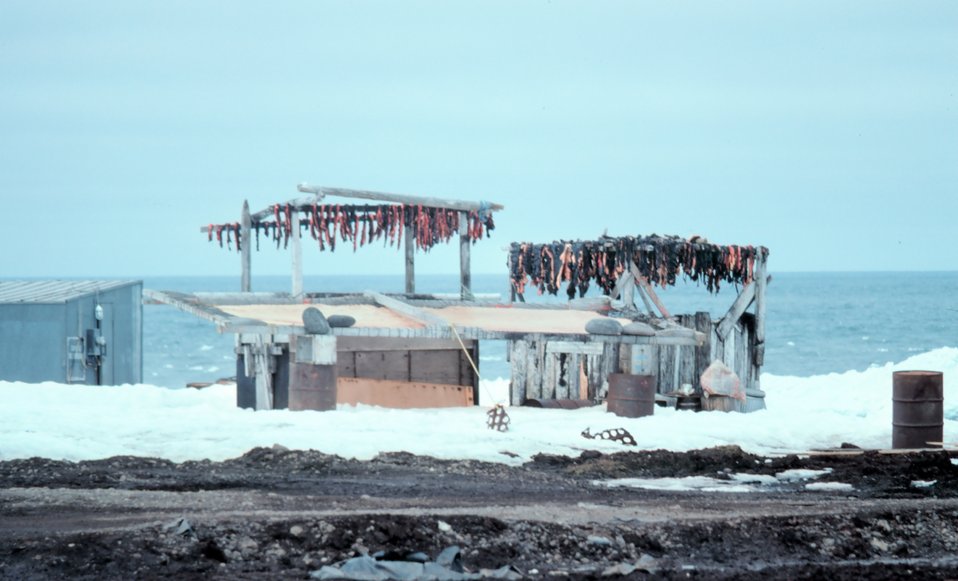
Drying seal meat.